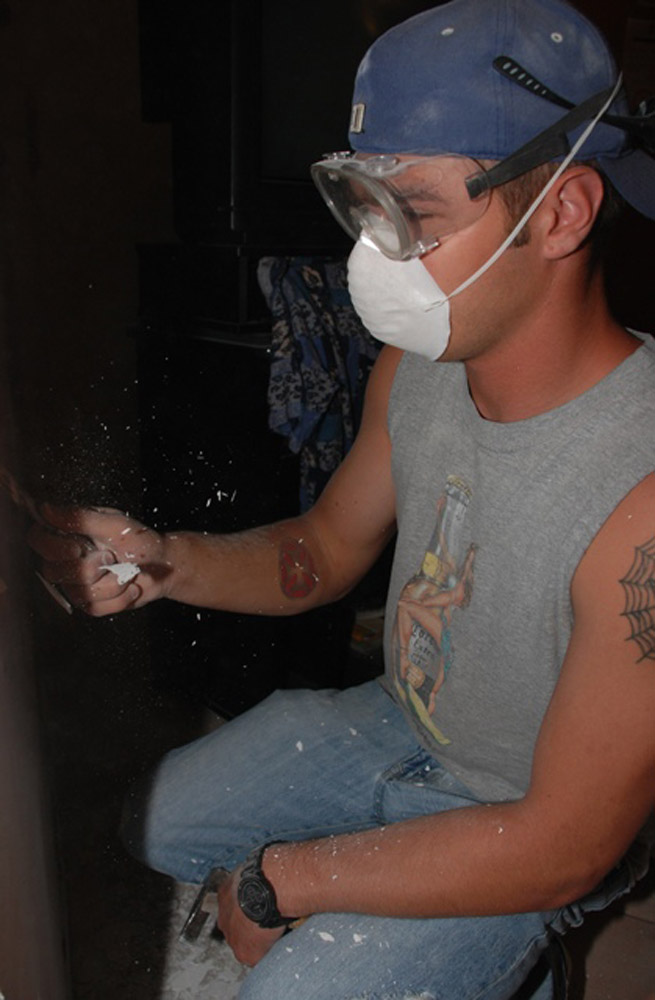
Camp Darby Airmen help Italian veterans

Paint chips fly as Airman 1st Class David Dearstone scrapes a wall during a volunteer effort to refurbish an Italian veterans hall in Livorno, Italy. Airman Dearstone is with the 31st Munitions Squadron at nearby Camp Darby.